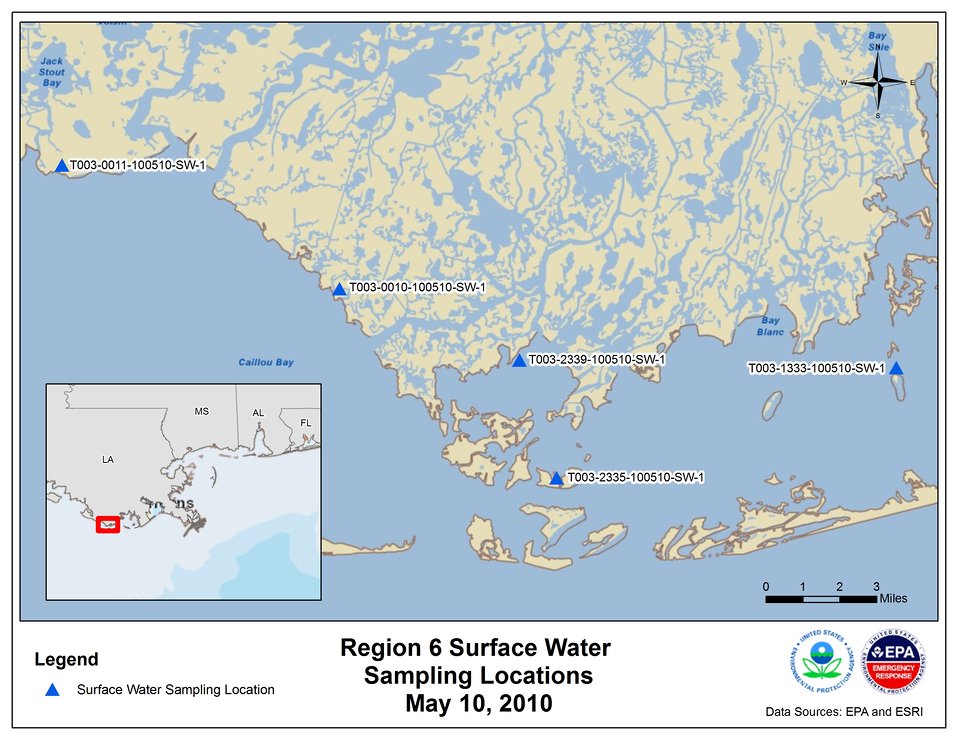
EPA Water Sampling Locations May 10, 2010